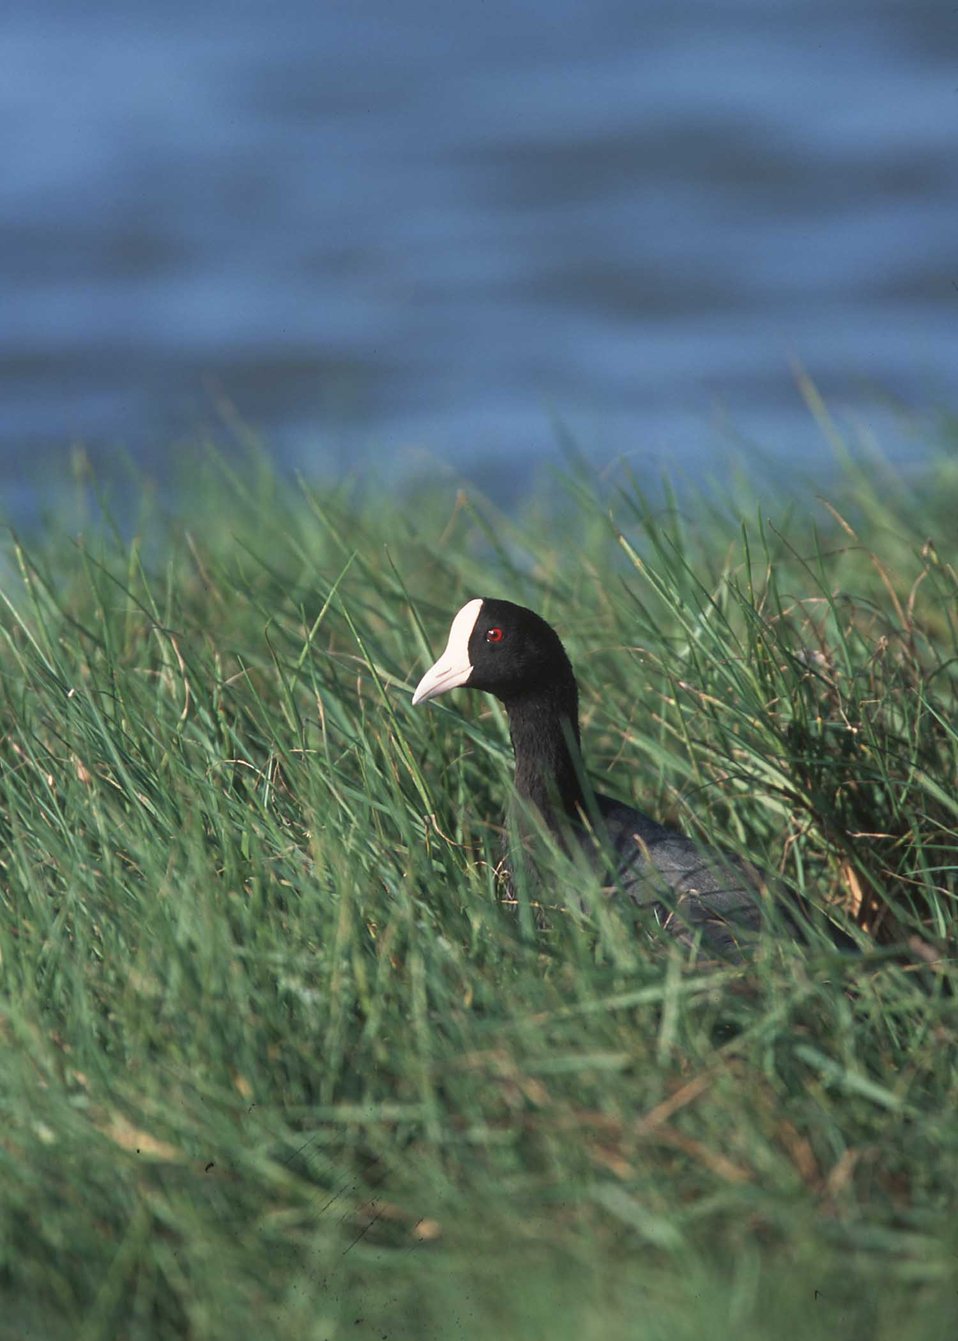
Hawaiin Coot in Hawaii.